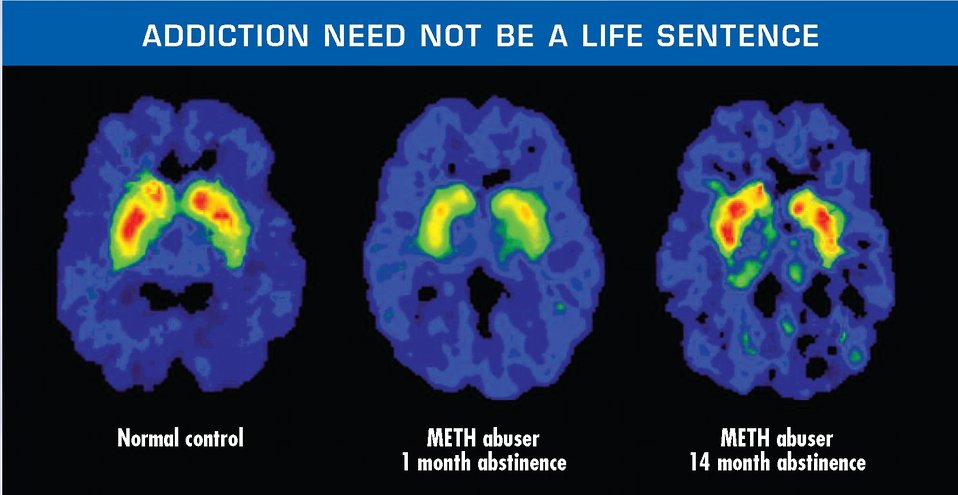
Addiction-brain recovery